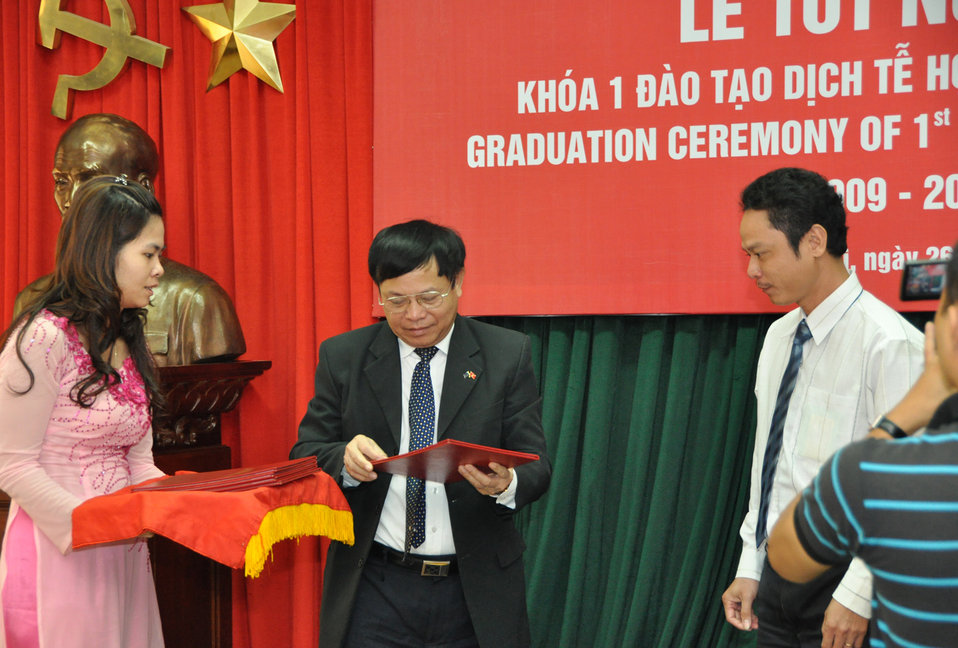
Field Epidemiology Training Program Graduation

The first five fellows graduated today from Vietnam's Field Epidemiology Training Program, a U.S.-supported initiative that provides public health workers with skills to rapidly identify, investigate, and respond to disease outbreaks.

The Field Epidemiology Training Program (FETP) was established by Vietnam's Ministry of Health in 2008 with funding and technical support from the U.S. Agency for International Development (USAID), the U.S. Centers for Disease Control and Prevention, the Joint U.N. Program, and the World Health Organization.